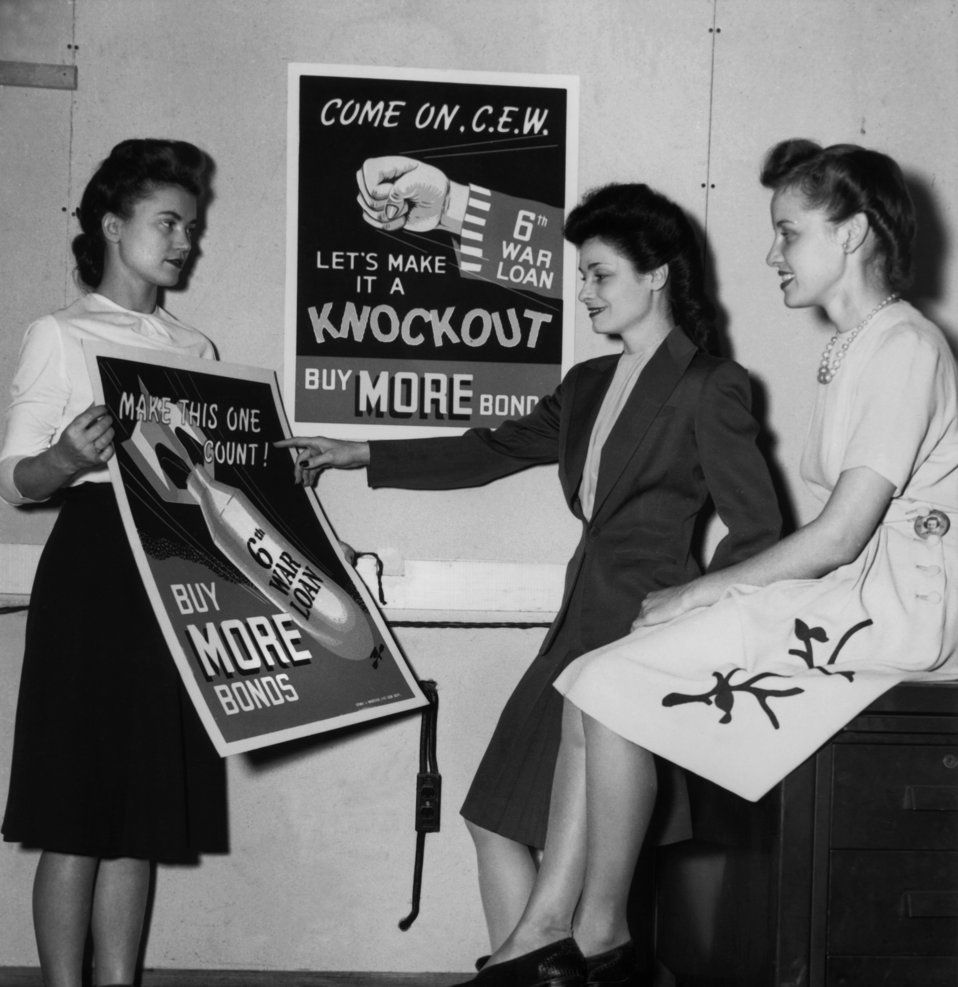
War Bond Drive Oak Ridge

PRO137-2 DOE photo by Ed Westcott

War Bond Drive Oak Ridge Tennessee 11/16/44